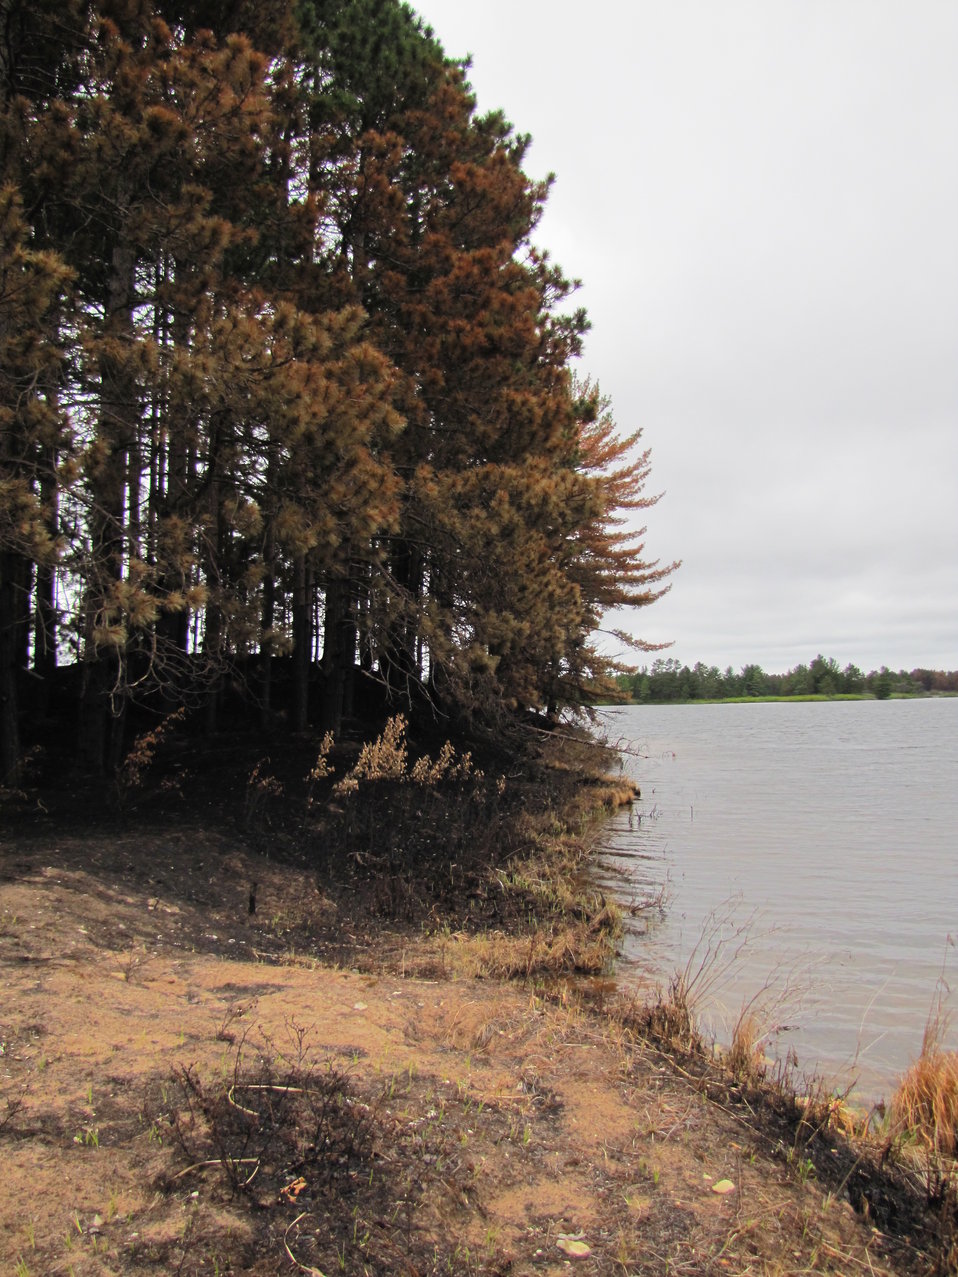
Fire Edge

Now that the Pine Creek North Wildfire has been labeled contained, we have started our picture photo points to illustrate the positive effects fire has on our landscape here at Seney. This point is just off the fishing loop that can be viewed by the public either by taking the drive or by our Facebook uploads each week.